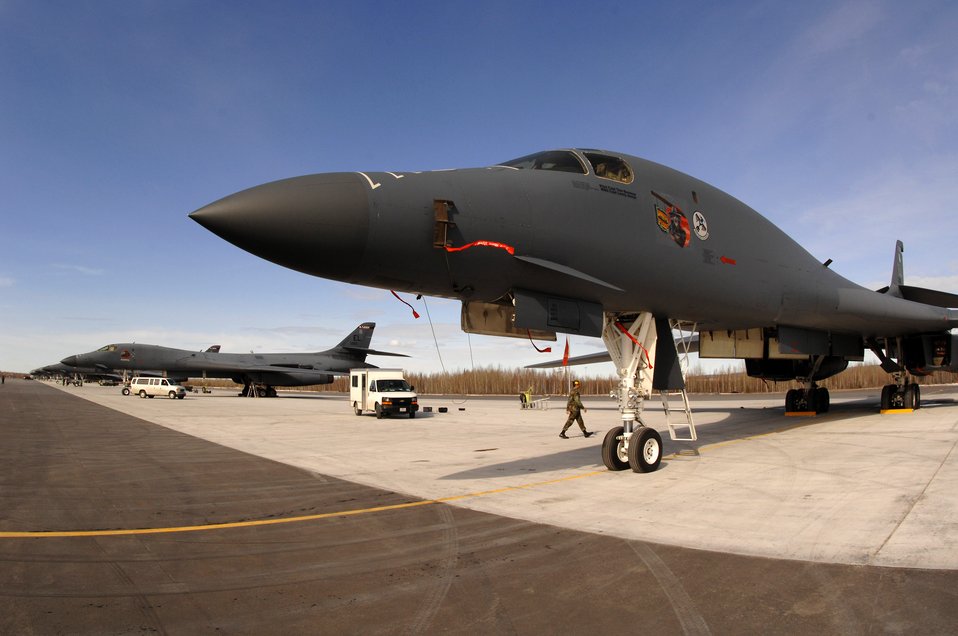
Red Flag-Alaska strengthens coalition forces

B-1B Lancers from Ellsworth Air Force Base, S.D., sit on the flightline at Eielson AFB, Alaska, April 9 during Red Flag-Alaska 07-1. Red Flag-Alaska enables aircrews to sharpen their combat skills by flying ten simulated combat sorties in a realistic threat environment. Additionally, the training allows them to exchange tactics, techniques, and procedures and improve interoperability.